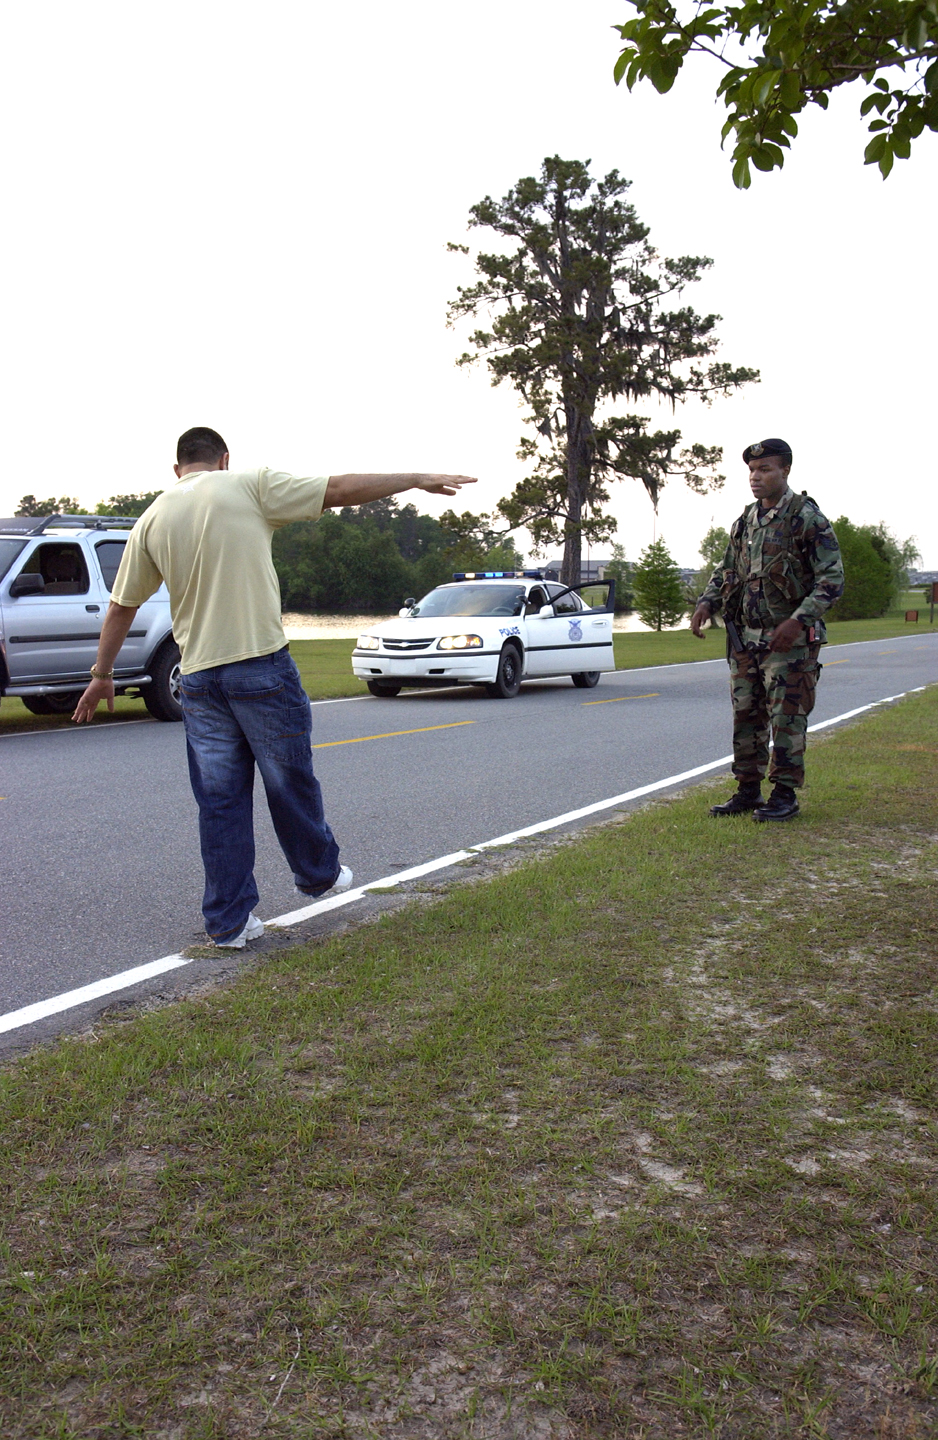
DUIs carry all sorts of consequences

Staff Sgt. Xavier Daniel practices giving a field sobriety test at Moody Air Force Base, Ga., Monday, April 17, 2006. He is assigned to the 347th Security Forces Squadron.